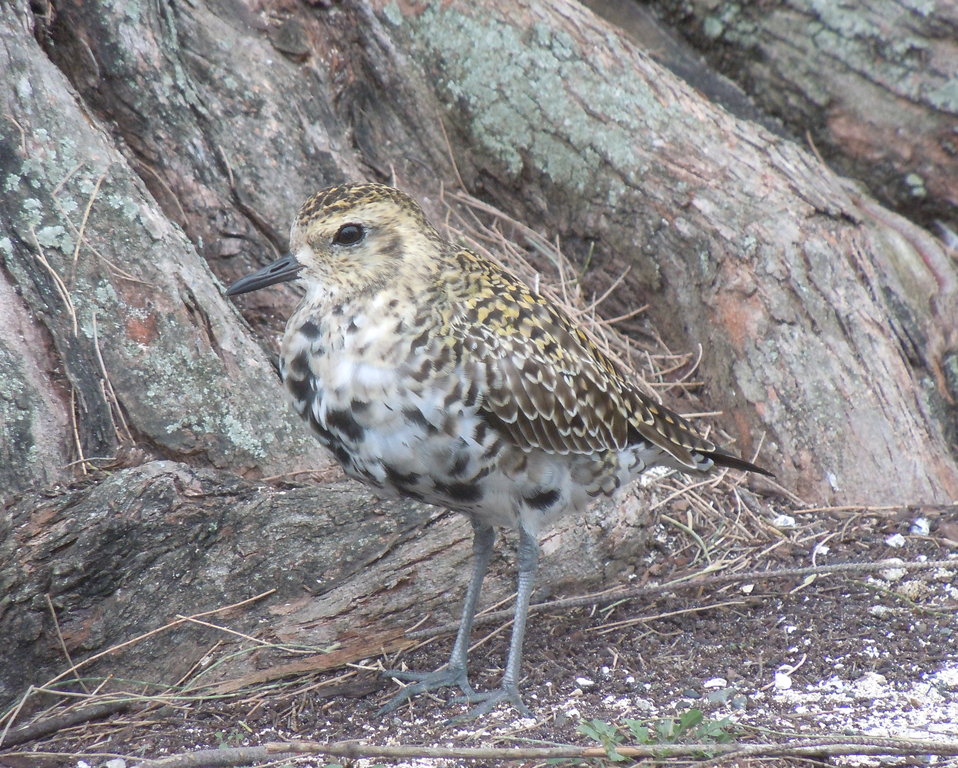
pacific golden plover

Midway Atoll National Wildlife Refuge
March 2012